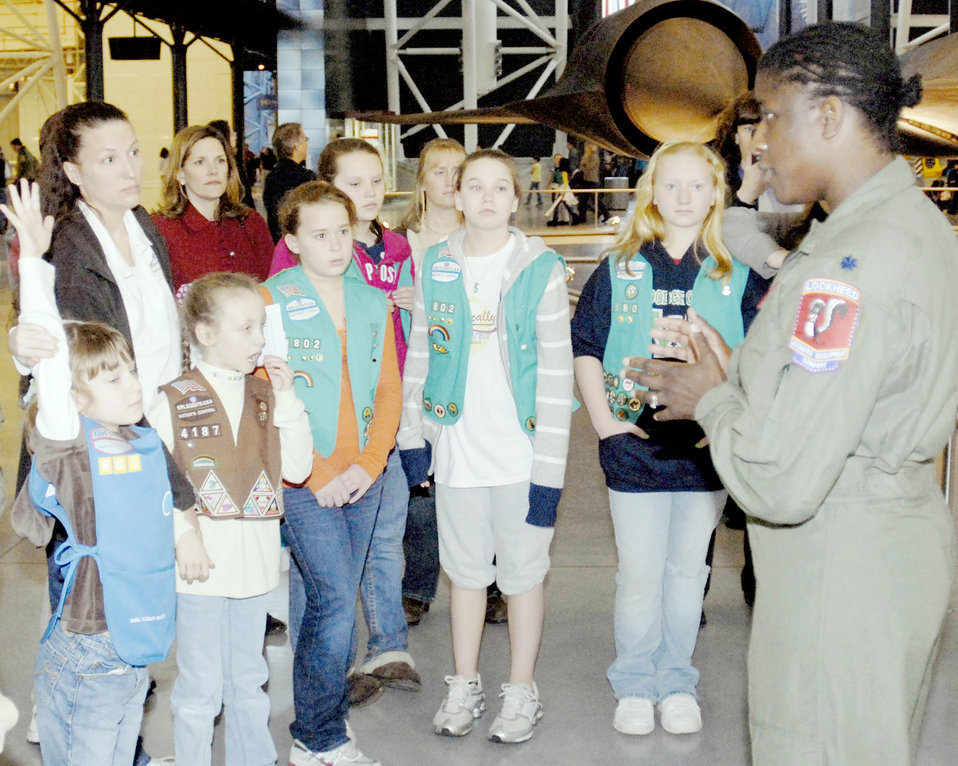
Lt. Col. Merryl Tendgesdal

Lt. Col. Merryl Tengesdal: The first African-American female U-2 pilot